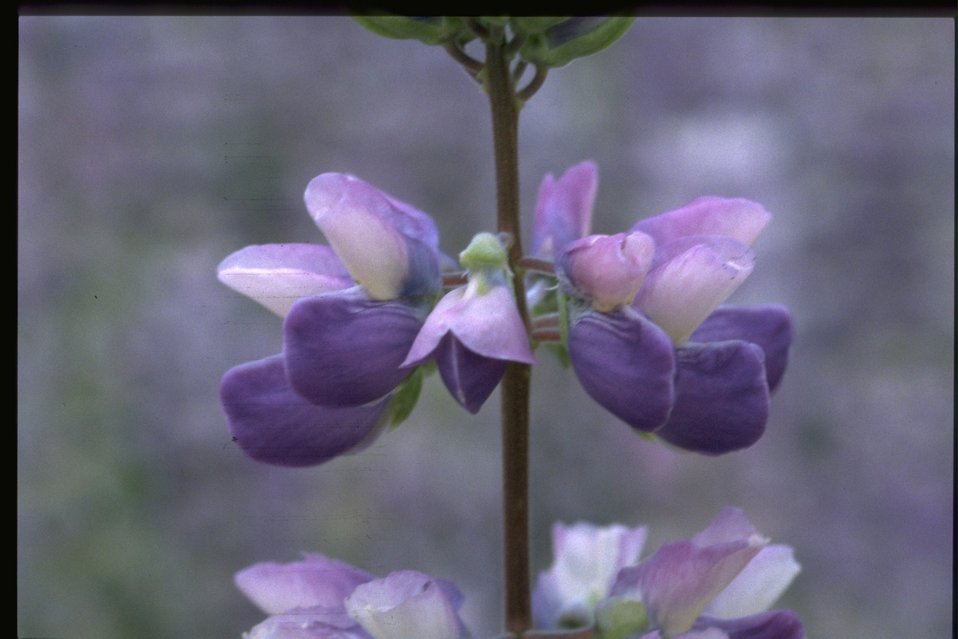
Closeup shot of lupine wildflower (Lupinus arcticus).